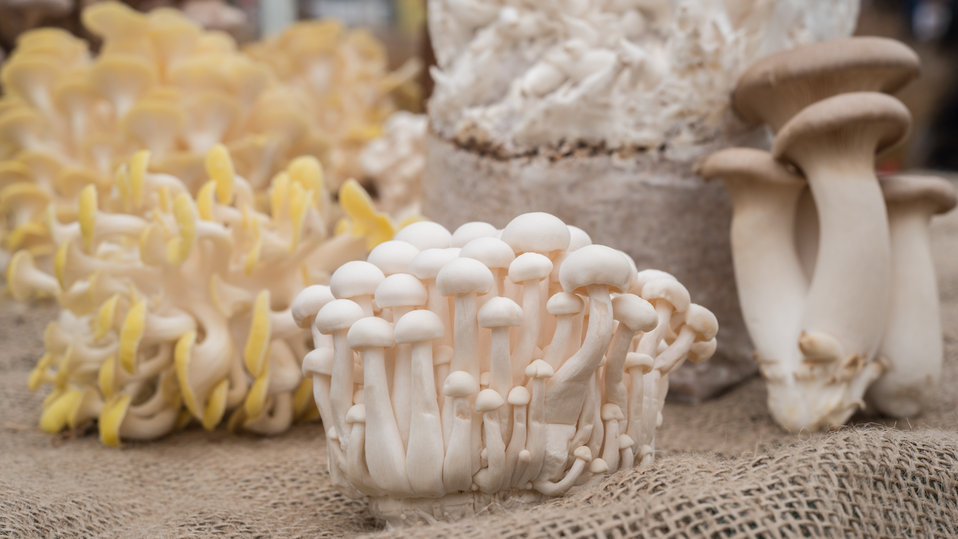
(Left - right) Yellow oyster (yellow and white), beech (small button cap), and royal trumpet (large stem), mushrooms on display at the U.S. Department of Agriculture (USDA) farmers markets and Harvest Festival at the USDA Whitten Building east parking lot in Washington, DC, on Friday, November 22, 2013.